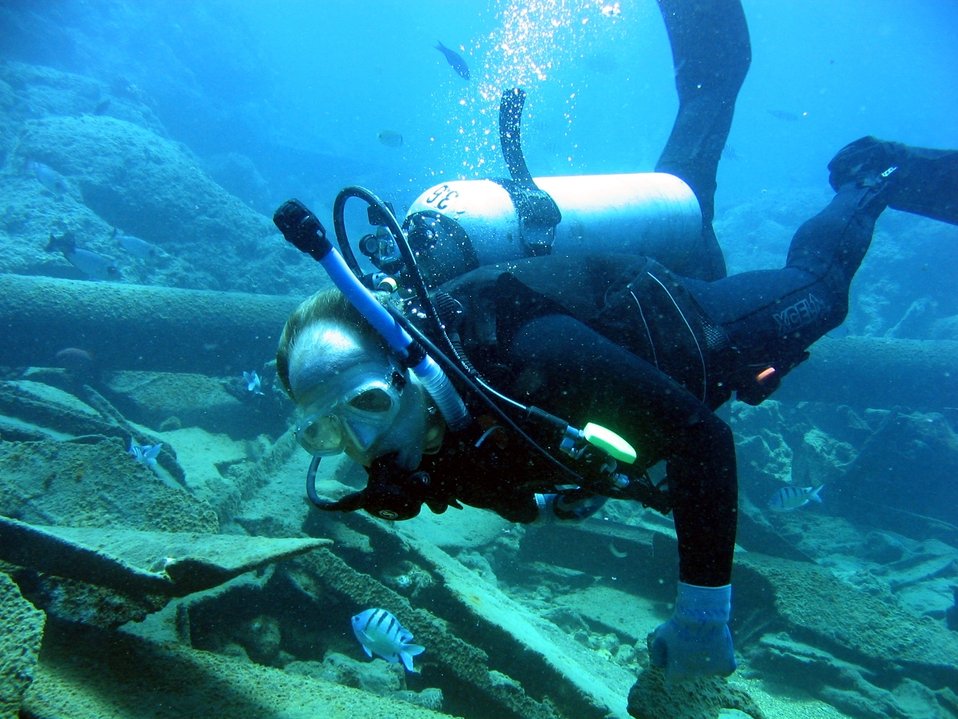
Diver inspecting modern ship wreck on Pearl and Hermes Reef.